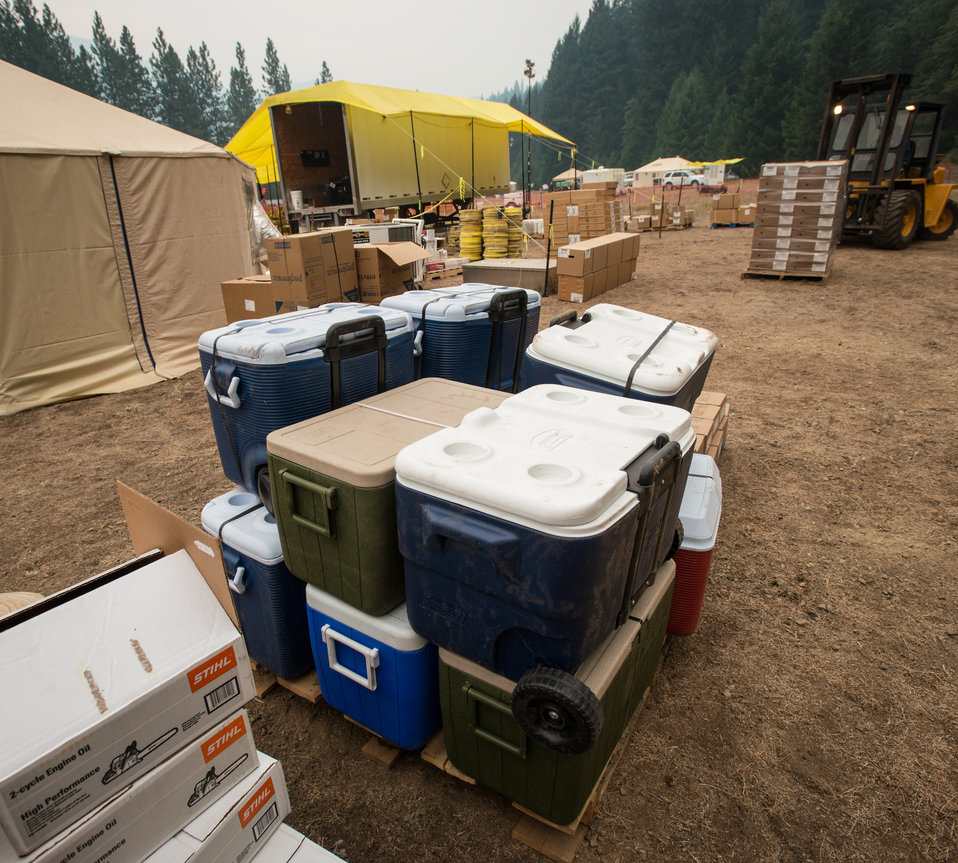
Ice chests available for firefighters at the Salmon River Complex Fire burning northwest of Sawyers Bar and west of Etna and Yreka, CA in the Klamath National Forest, on Tuesday, Aug. 6, 2013. It is vital that when a firefighter needs fire resistant clothing, a Mccloud Tool, Pulaski Axe, Combi Tool, pumps, connectors and hoses to draw water from a portable reservoirs to pressurize hand line (fire hoses), they go to this centralized point to get readily available item for issue or replacement as needed. These supplies have been shipped from the National Interagency Supply Cache System depots and/or other caches to this and other fires across the nation.